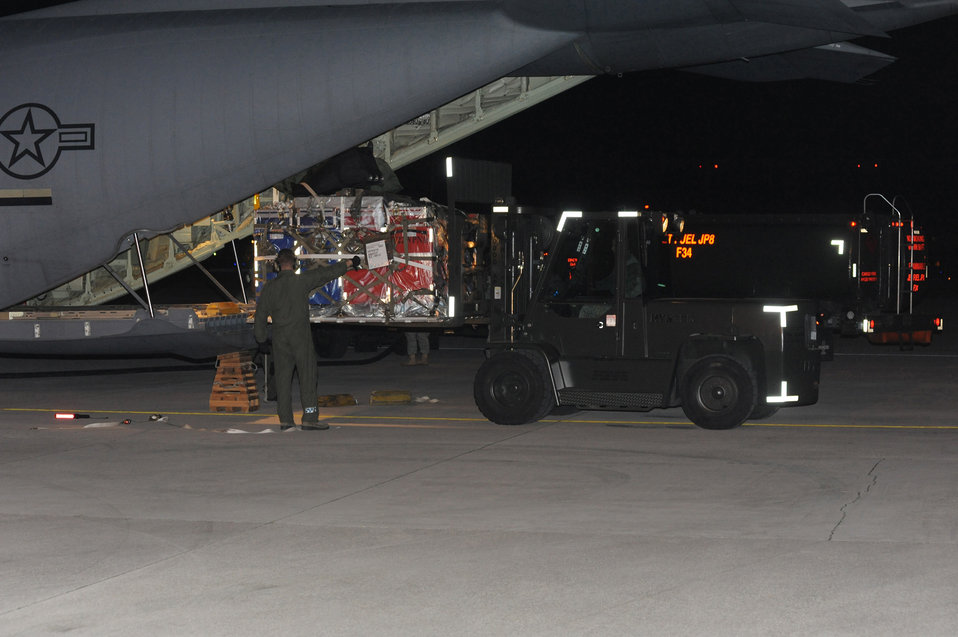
This Way Follow Me.

Staff Sgt. Glenn Scott, 37th Airlift Squadron C-130 Hercules loadmaster from Ramstein Air Base, Germany, directs unloading of cargo March 20 at Aviano Air Base. Joint Task Force Odyssey Dawn is the U.S. Africa Command task force established to provide operational and tactical command and control of U.S. military forces supporting the international response to the unrest in Libya and enforcement of United Nations Security Council Resolution (UNSCR) 1973. UNSCR 1973 authorizes all necessary measures to protect civilians in Libya under threat of attack by Qadhafi regime forces. JTF Odyssey Dawn is commanded by U.S. Navy Admiral Samuel J. Locklear, III.